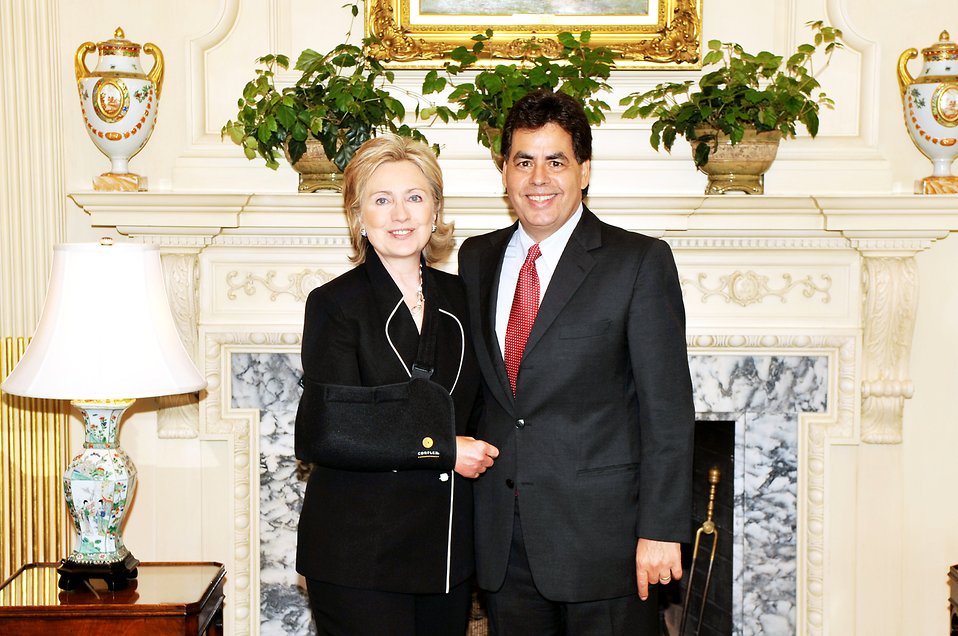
Secretary Clinton Meets With Nominee for Shanghai Expo 2010 Commissioner General

U.S. Secretary of State Hillary Rodham Clinton during a meeting with Jose Villarreal, Nominee for Commissioner General, Shanghai Expo 2010 at the U.S. Department of State in Washington, DC July 1, 2009.